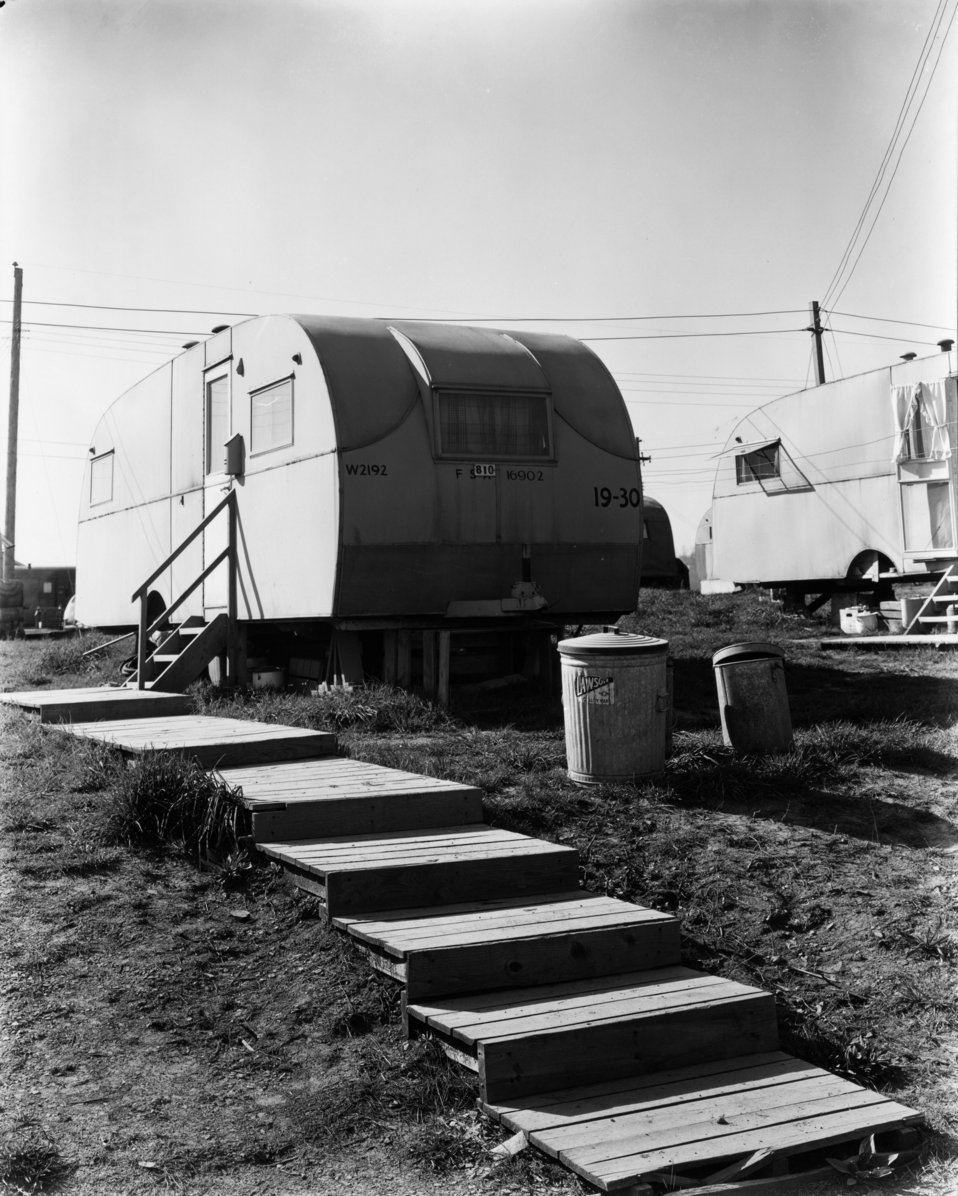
Housing at Oak Ridge